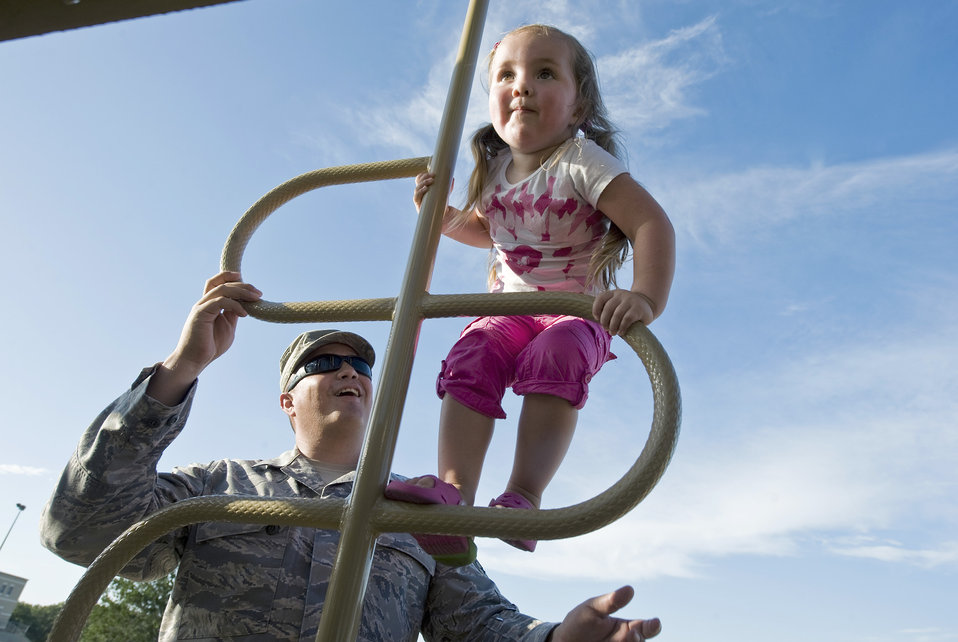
Know before you go

Master Sgt. Rodolfo Gamez watches over his daughter, Eva, while she climbs on a jungle gym at their neighborhood park. The Gamezes are set to deploy to separate locations later this year for year-long deployments.